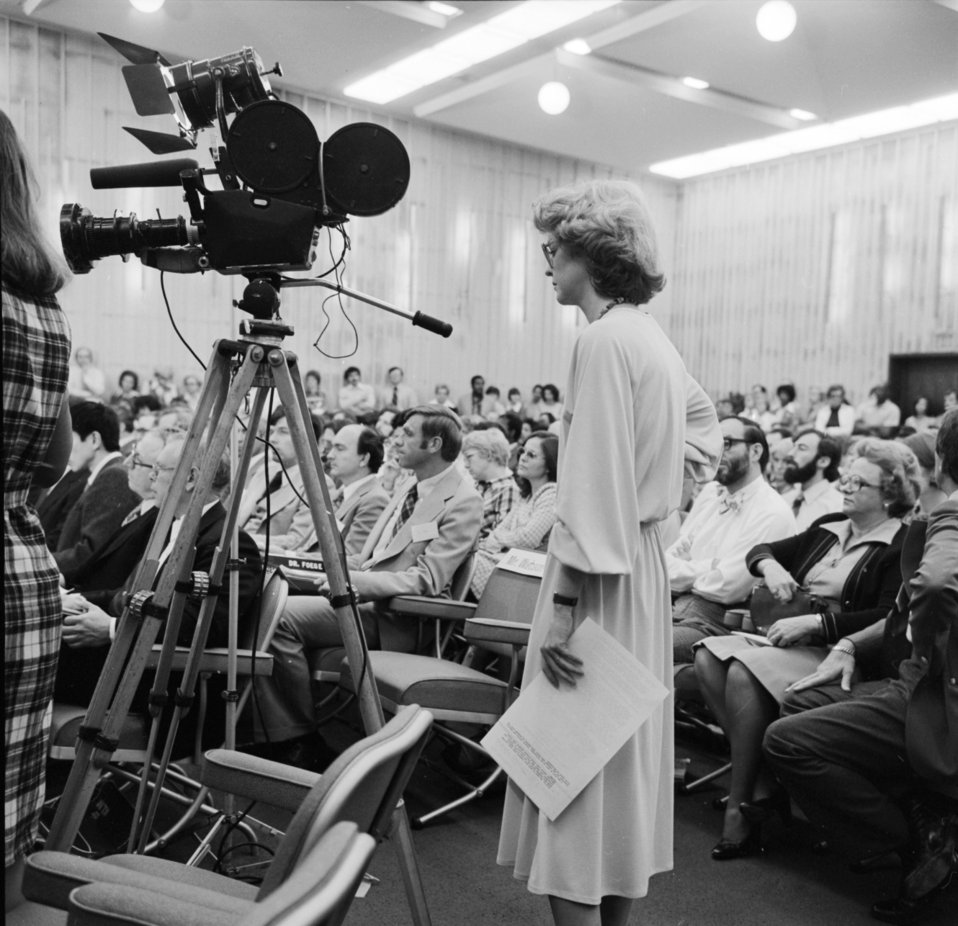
This 1977 photograph was taken at a Legionnaires' Disease Senate Hearing during the disease outbreak of the 1970s.